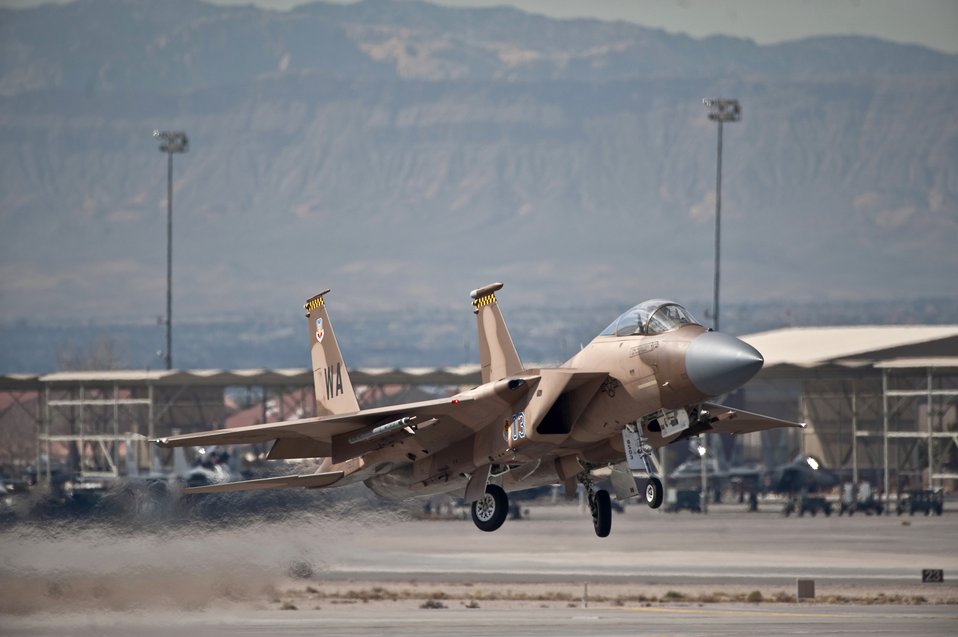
Cleared for takeoff

A pilot from the 65th Aggressor Squadron takes off in an F-15 Eagle Feb. 2, 2011, for a training mission during exercise Red Flag 11-2 at Nellis Air Force Base, Nev.